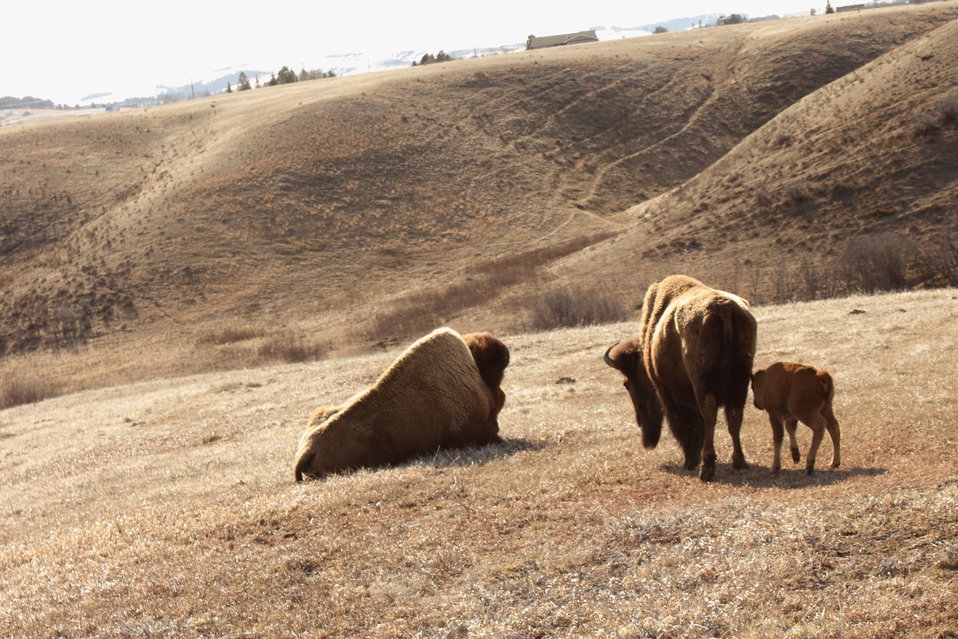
Bison Family in Montana

Pictured is the bison family in the Charles M. Russell National Wildlife Refuge pasture behind the main office in Lewistown, Montana. The calf was born Thursday, April 7th, 2011 and is 4 days old in the photos. The bull and cow bison are Monte, 25 years old, and Cinnamom, 16 years old. In the wild, a 15 year old bull bison is considered fairly old.